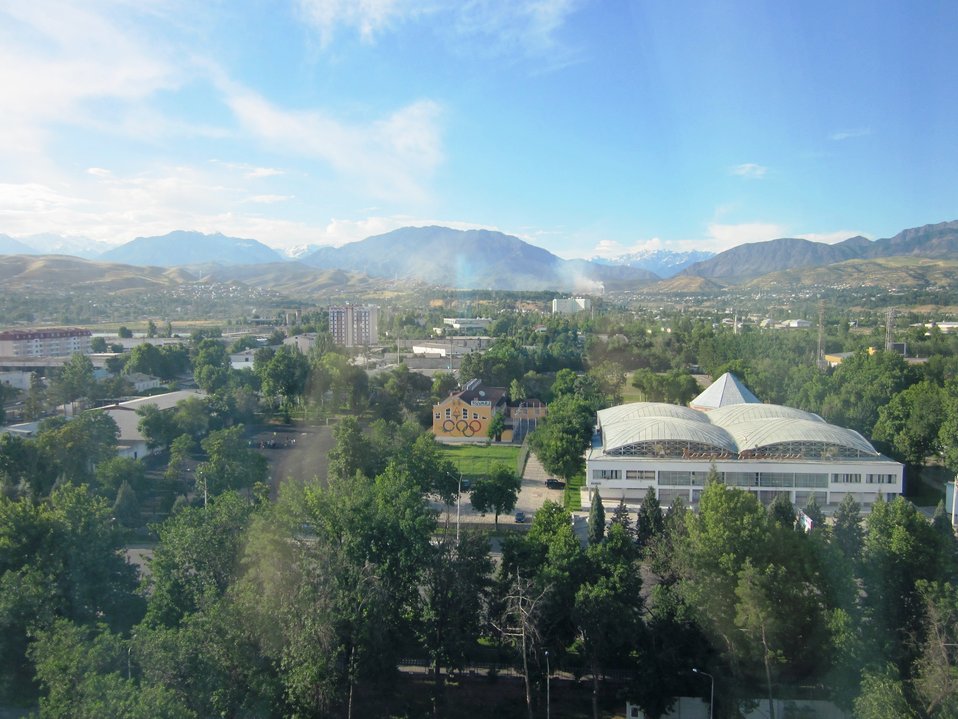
The Dushanbe Landscape From the Dushanbe Hyatt Hotel

A photo is taken of the landscape from the Dushanbe Hyatt Hotel in Dushanbe, Tajikistan, on June 6, 2010.